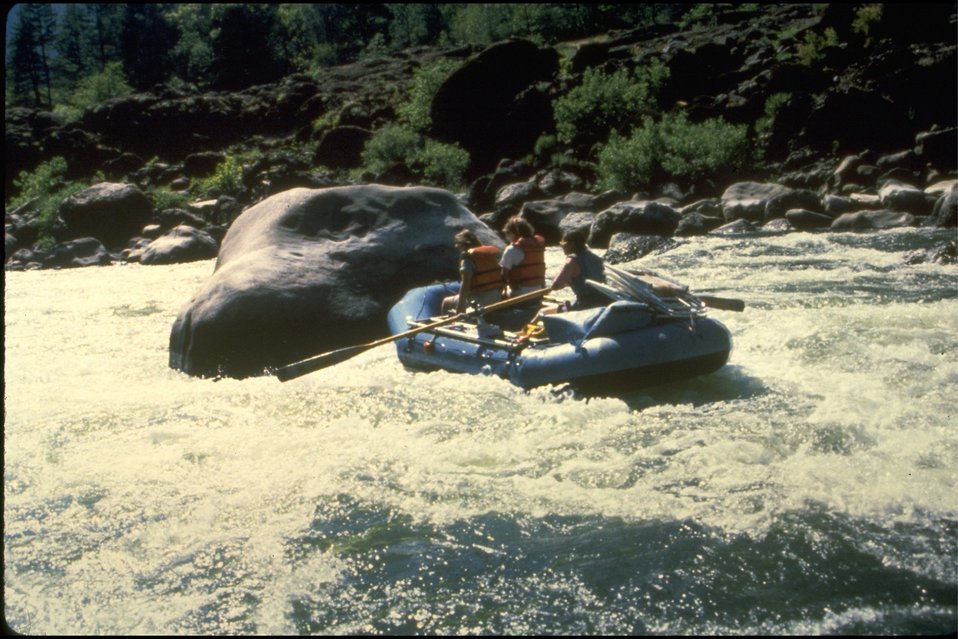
Rogue River - Blossom Bar. BLM orientation/maintenance trip.